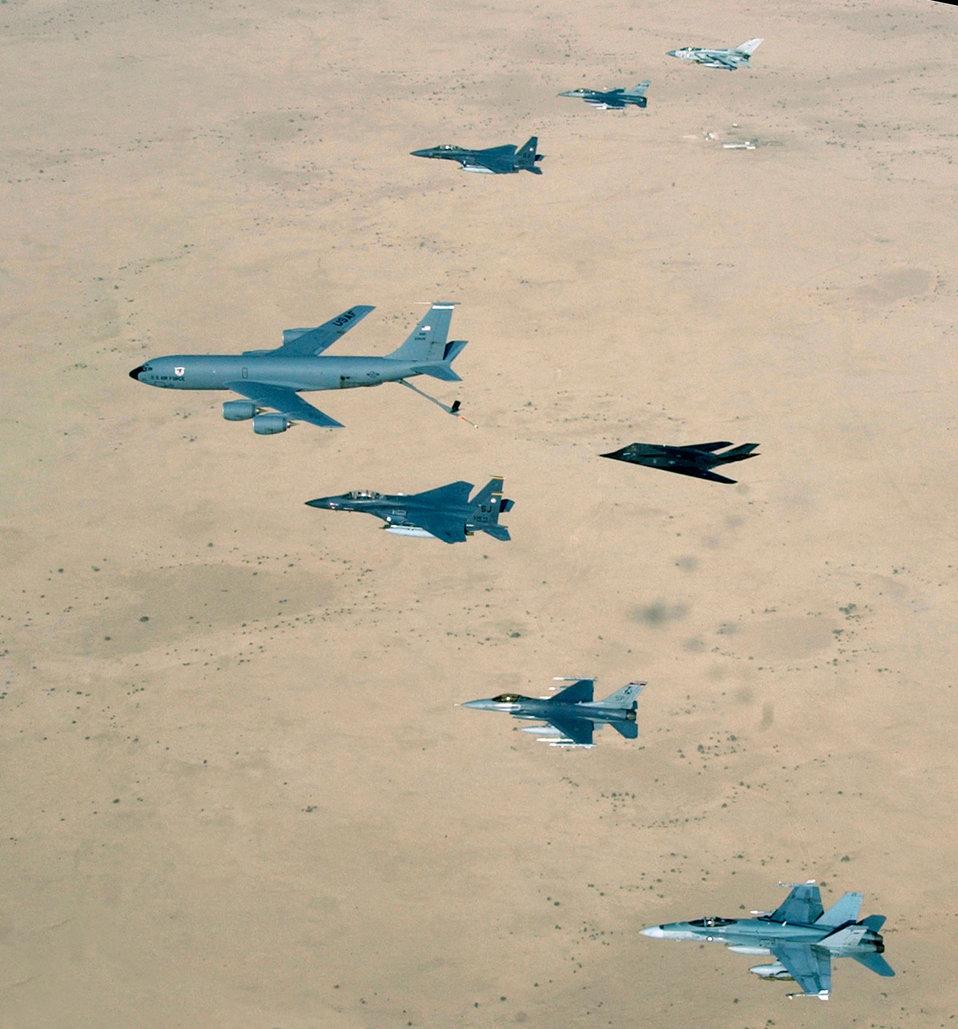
Formation of friends

OPERATION IRAQI FREEDOM -- Aircraft of the 379th Air Expeditionary Wing and coalition counterparts stationed together in a deployed location in southwest Asia fly over the desert., April 14, 2003. Aircraft include KC-135 Stratotanker, F-15E Strike Eagle, F-117 Nighthawk, F-16CJ, British GR-4 Tornado, and Australian F/A-18 Hornet.